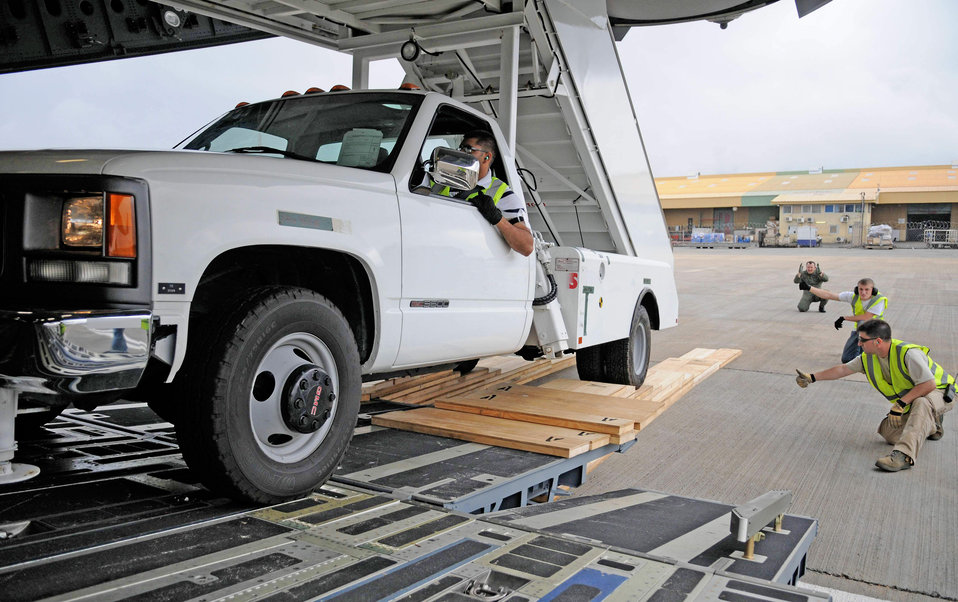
17th Air Force members support presidential visit to Ghana

Members of the 621st Contingency Response Wing along with C-17 Globemaster III aircrew members work together to ensure proper clearance during offloading operations of a stair truck at Kotoka International Airport July 6 at Accra, Ghana. The Airmen are among more than 150 Airmen, Sailors and Marines in Ghana and Sailors aboard the USS Iwo Jima who form a task force supporting President Barack Obama's visit July 10 and 11. Members from the 621st CRW are from McGuire Air Force Base, N.J., and the C-17 aircrew is from Charleston Air Force Base, S.C.